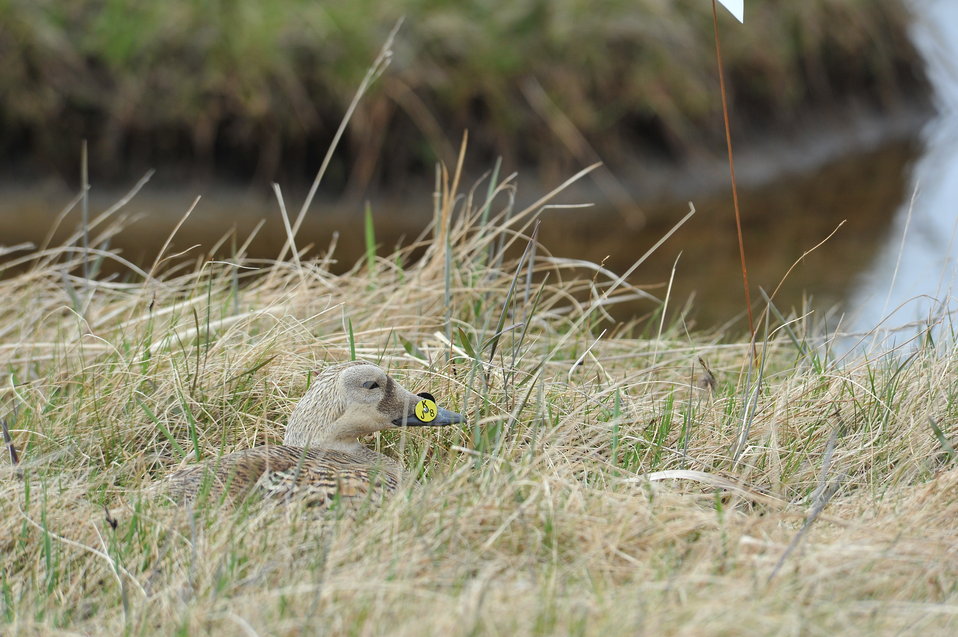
Nasal Disc Resight

Nasal discs are a tool that are used to ID spectacled eider females. When a female is sitting on her nest tarsal bands are not able to be read. The nasal discs help with resighting efforts and reduce disturbance to the female during incubation. This nasal disc is KJ8. This number can be looked up and associated with a USFWS metal band. The metal band number will tell us when the female was banded, approximately how old she is, and how often she has been encountered on the island. This type of information is important for survival analysis and population models.

USFWS Yukon Delta NWR